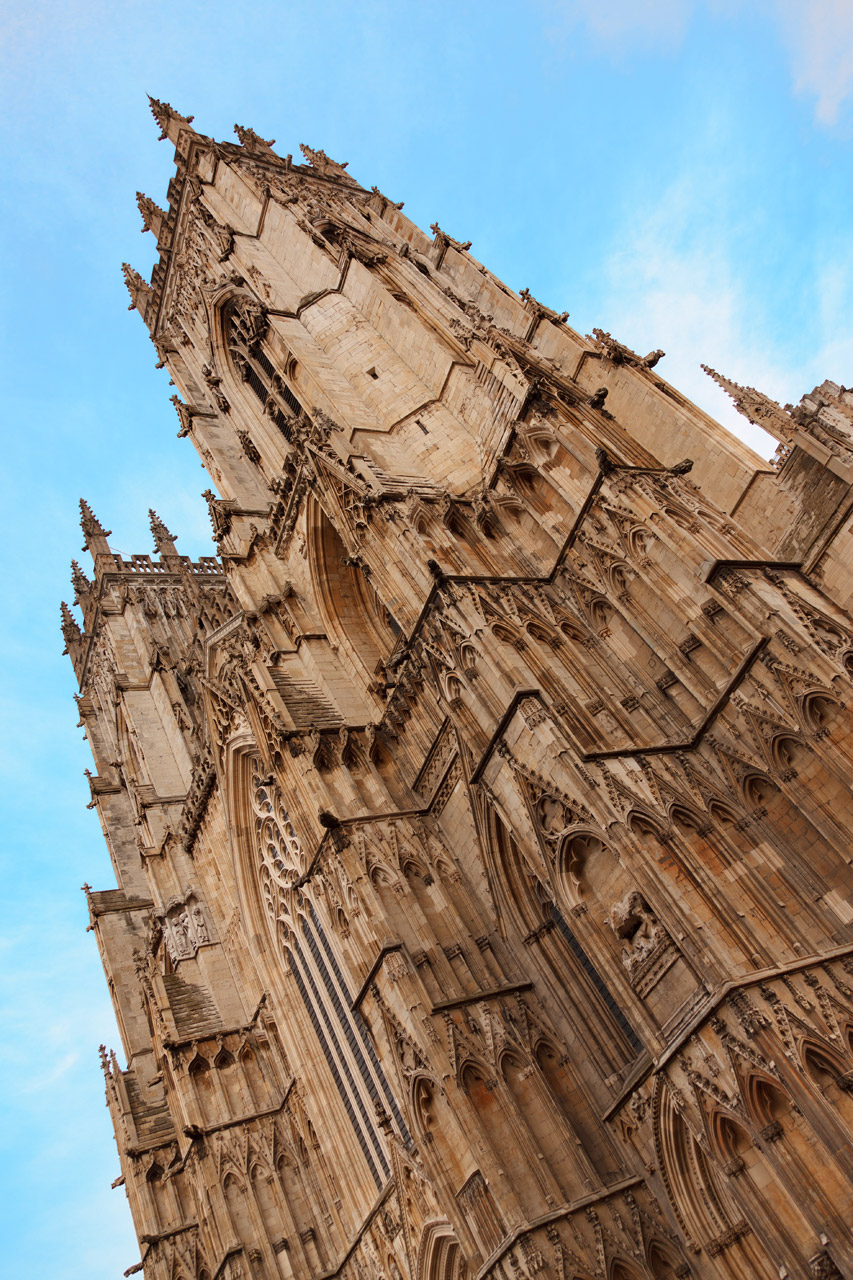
Cathedral in york

York minster cathedral against blue sky.